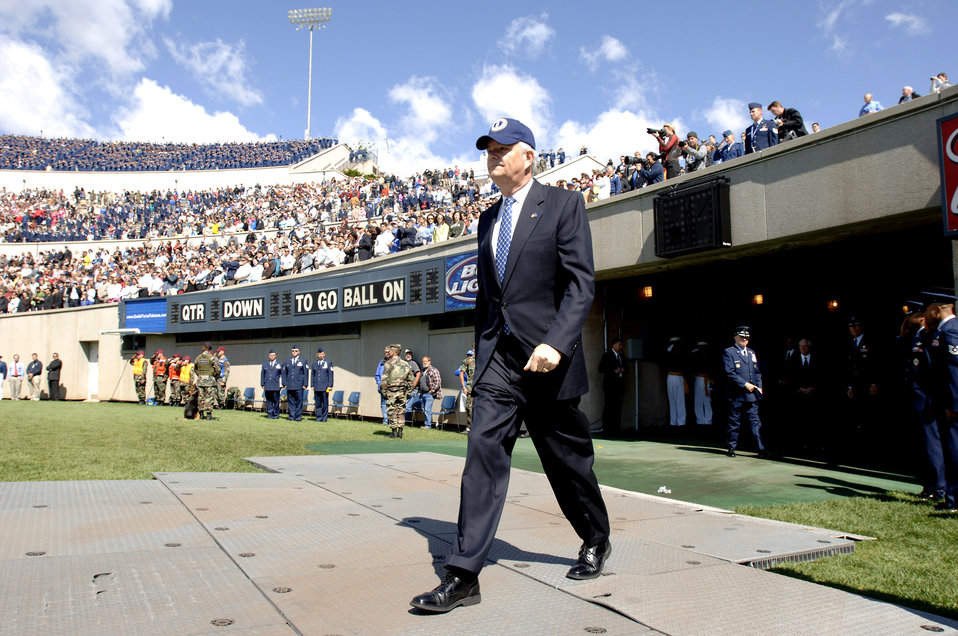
'Stay true' SECDEF tells Air Force Academy grads

Secretary of the Air Force Michael W. Wynne walks into Falcon Stadium at the start of the 2007 U.S. Air Force Academy graduation ceremony May 30 in Colorado Springs, Colo.